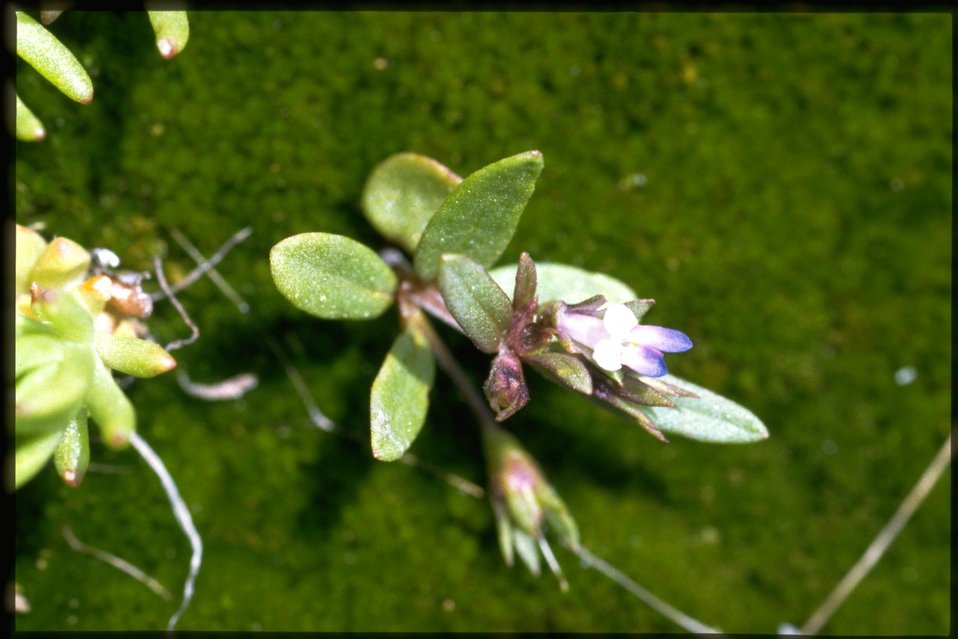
Closeup shot of Blue-eyed Mary, Collinsia Parviflora, wildflower growing in moss.